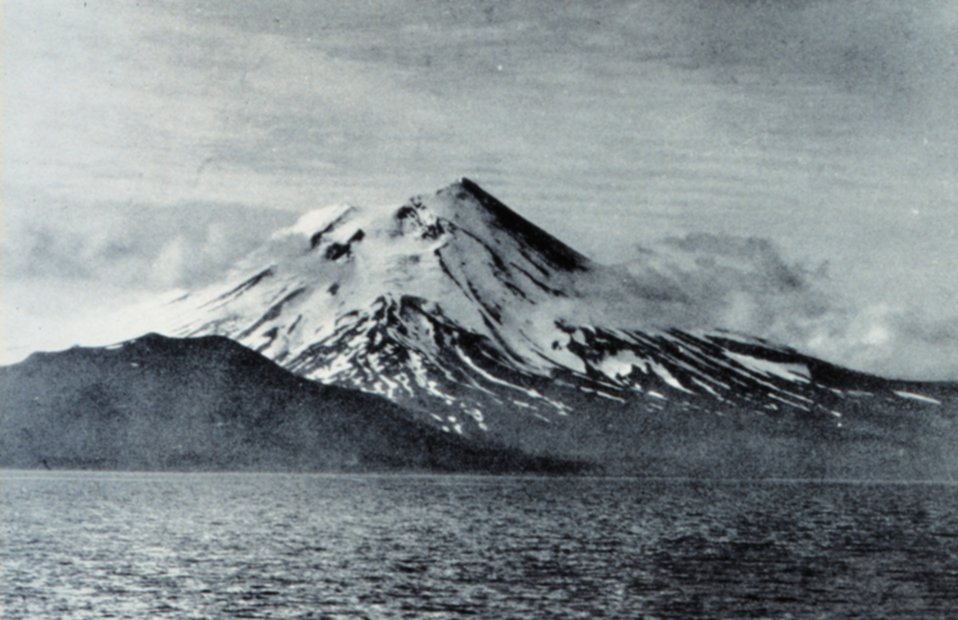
Mt. Vsevidov (The 'All-Seeing') on Umnak Island